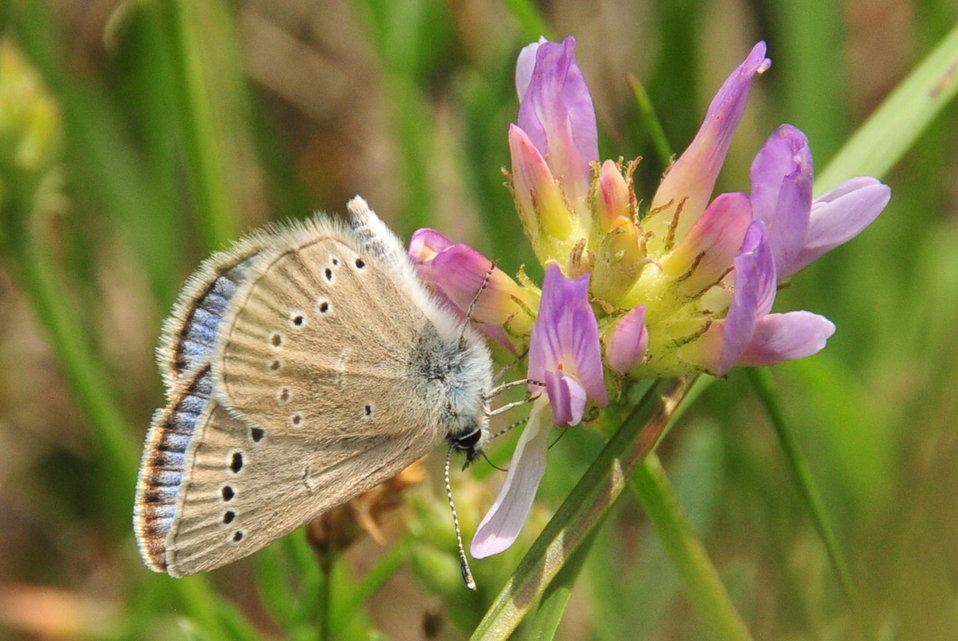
Silvery Blue Butterfly feeding on Standing Milkvetch on Sand Lake Wetland Management District